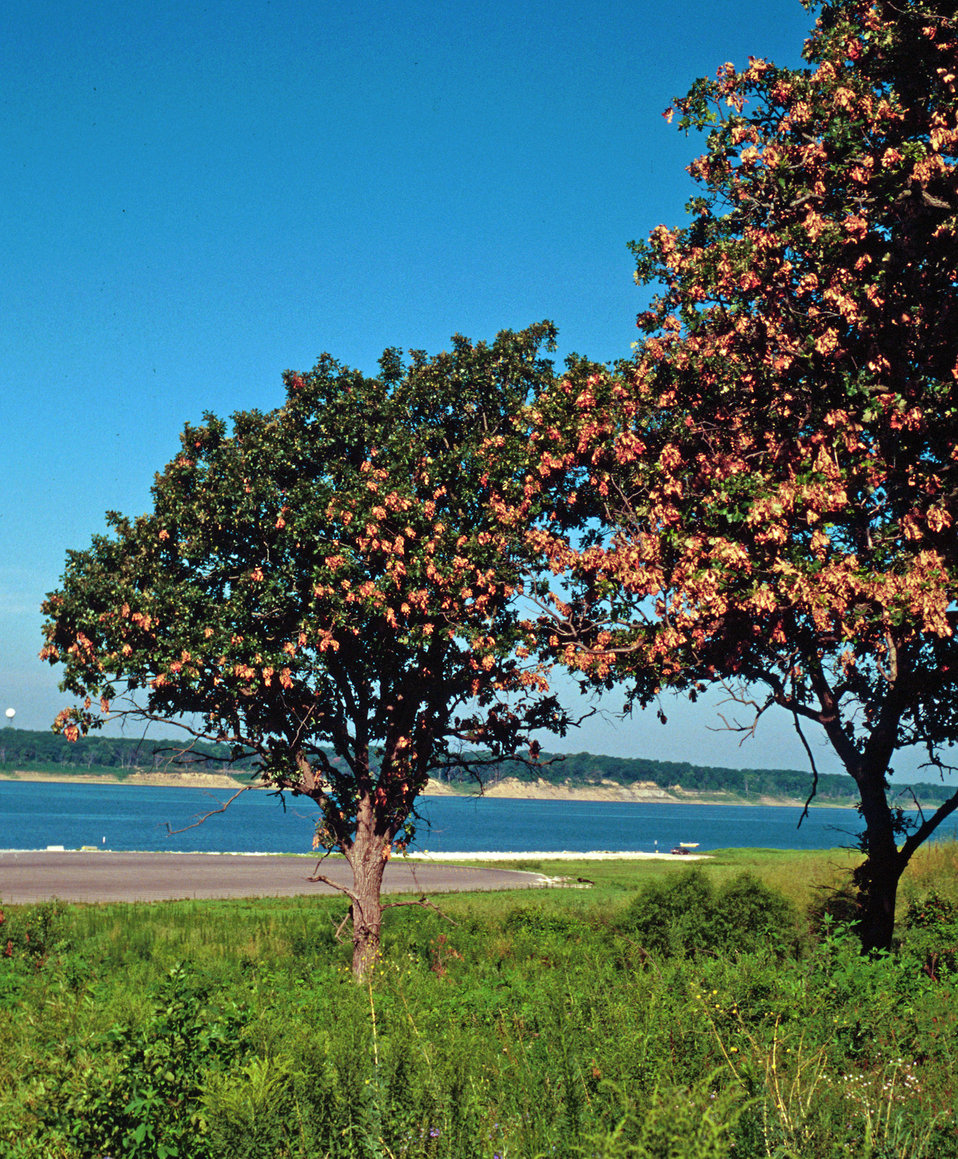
Cicada photo 2a

This spring will see the return of the 17-year cicada, a large, colorful, fly-like bug with large red eyes and tented wings.